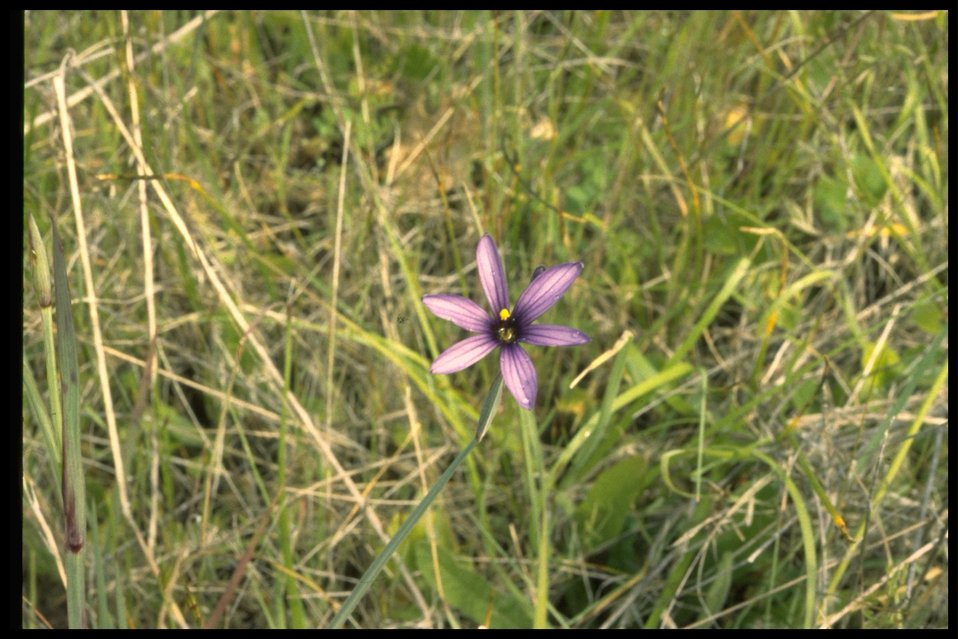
Sisyrinchium hitchcockii, commonly known as Hitchcock's blue-eyed Grass.